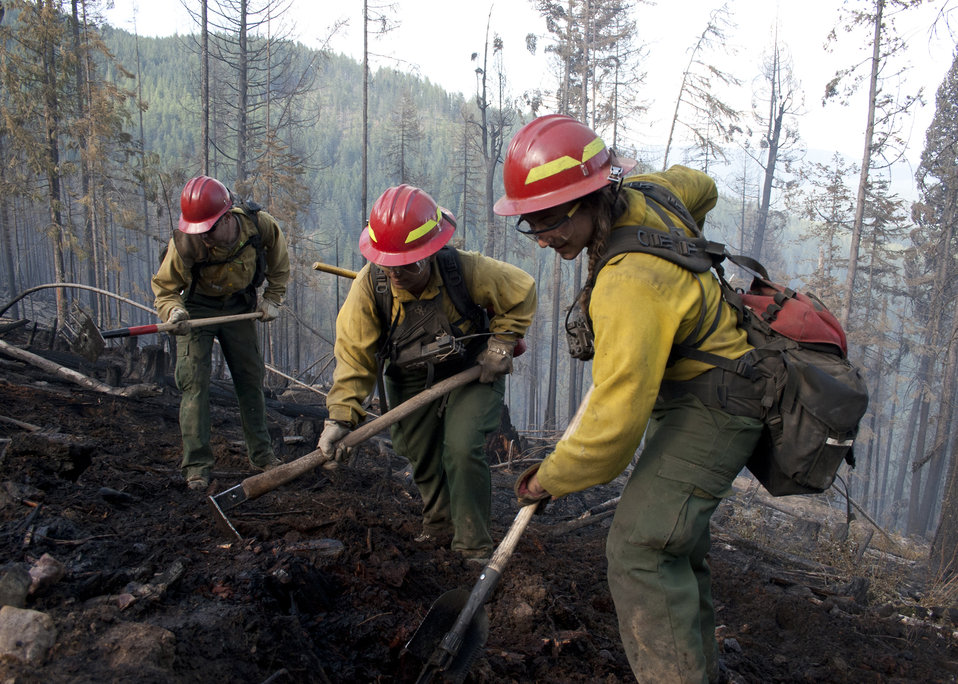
Firefighters supported by three fire engines, two helicopters, two water tenders, a dozer and an air tanker battled to contain the 90 acre Rogers Fire located on Mt. Rogers five miles west of Aladdin, WA on the Colville National Forest. Firefighters worked under adverse conditions with steep terrain and gusting winds to reduce the loss of timber and protect the Rogers Mountain Trail. The Rogers Fire began on Aug. 9, 2011 and was controlled by Aug. 19, 2011 with mop up crews ensuring that no flare-ups occurred. Colville National Forest has 1.1 million acres in northeastern Washington and includes the Kettle River, Selkirk Mountain ranges, and the upper reaches of the Columbia River.